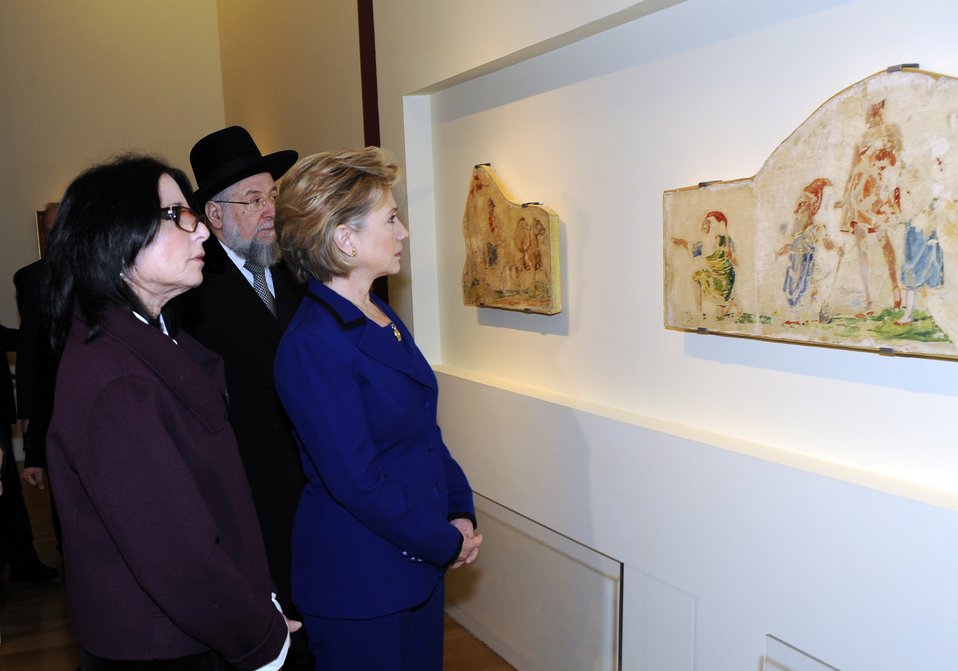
Secretary Clinton Visits Holocaust Art Museum

U.S. Secretary of State Hillary Clinton visited the new Bruno Schulz display, Wall Painting under Coercion, in the Holocaust Art Museum, guided by Director of the Museums Division Yehudit Inbar and Senior Art Curator Yehudit Shendar and accompanied by Chief Rabbi Lau, Yad Vashem Council Chairman, and Middle East Special Envoy Senator George Mitchell in Jerusalem March 3, 2009